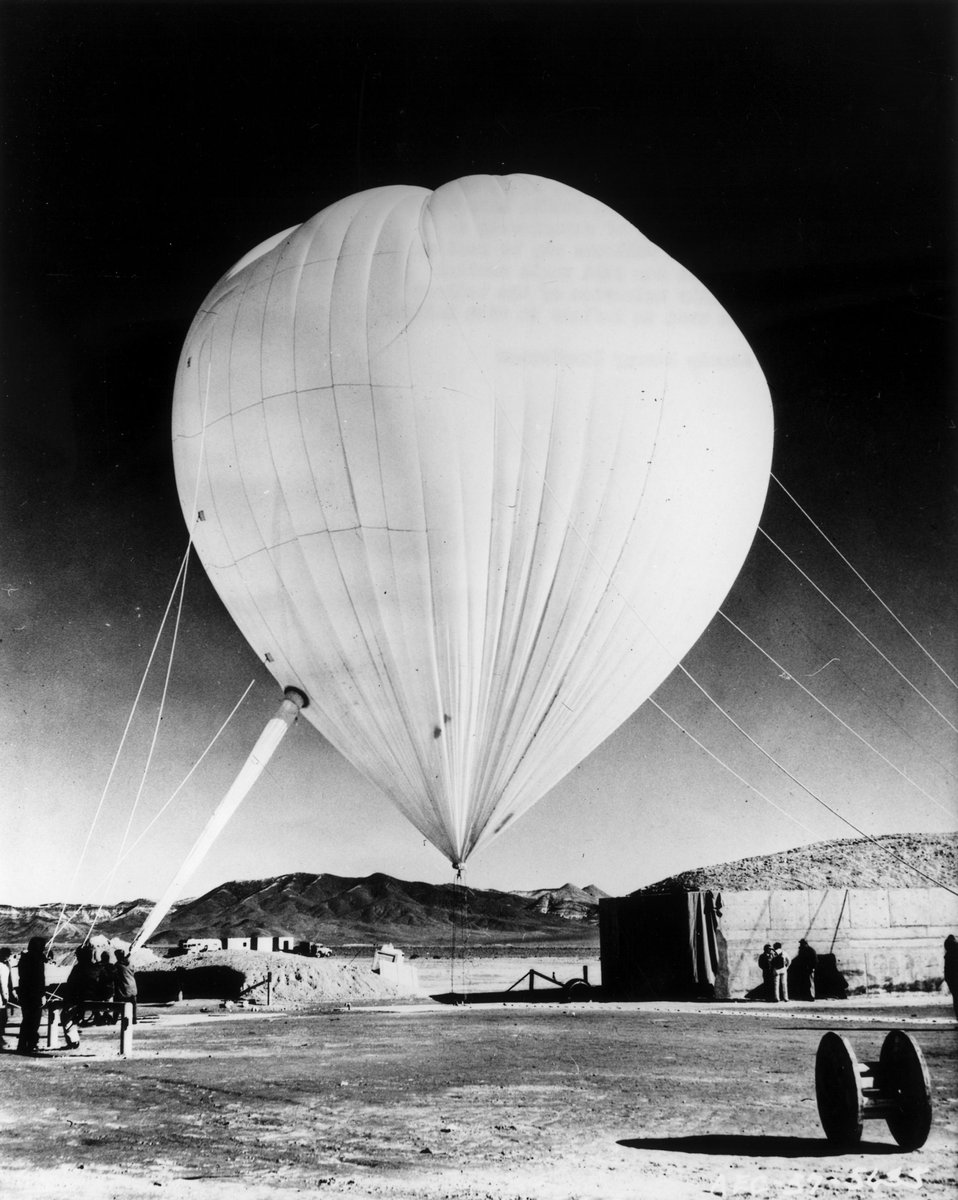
This photograph was made at a firing area in Yucca Flat, Nevada Test Site, the morning of January 30, 1957, as Nevada Test Organization and Sandia Laboratory personnel began a series of experiments to determine if anchored balloons may be used as detonation platforms for full scale nuclear tests. c. 1957